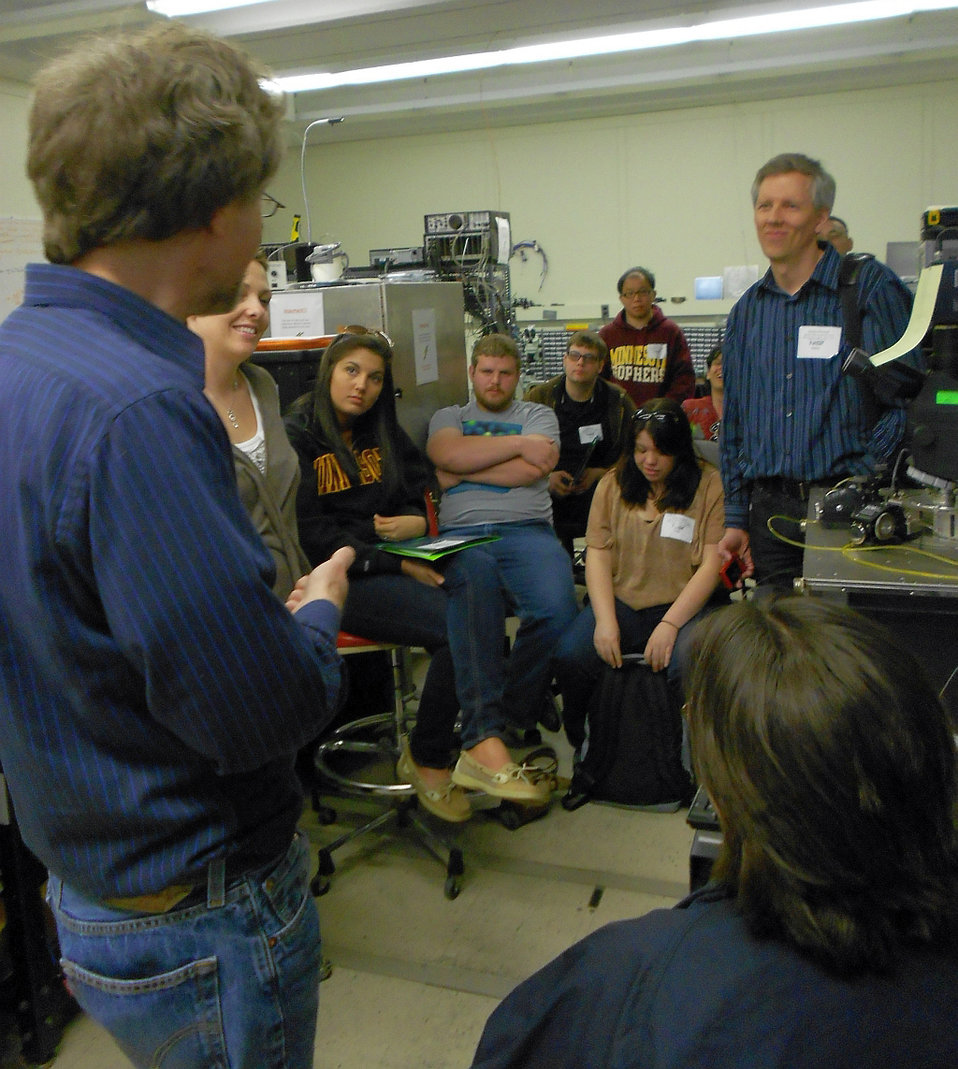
Rochester Community and Technical College Tour

John Suehle (left) of NIST’s Physical Measurement Laboratory’s Semiconductor and Dimensional Metrology Division explains research into the fabrication and characterization of nanoscale electronic devices to students and faculty from Rochester Community and Technical College in Rochester, MN.